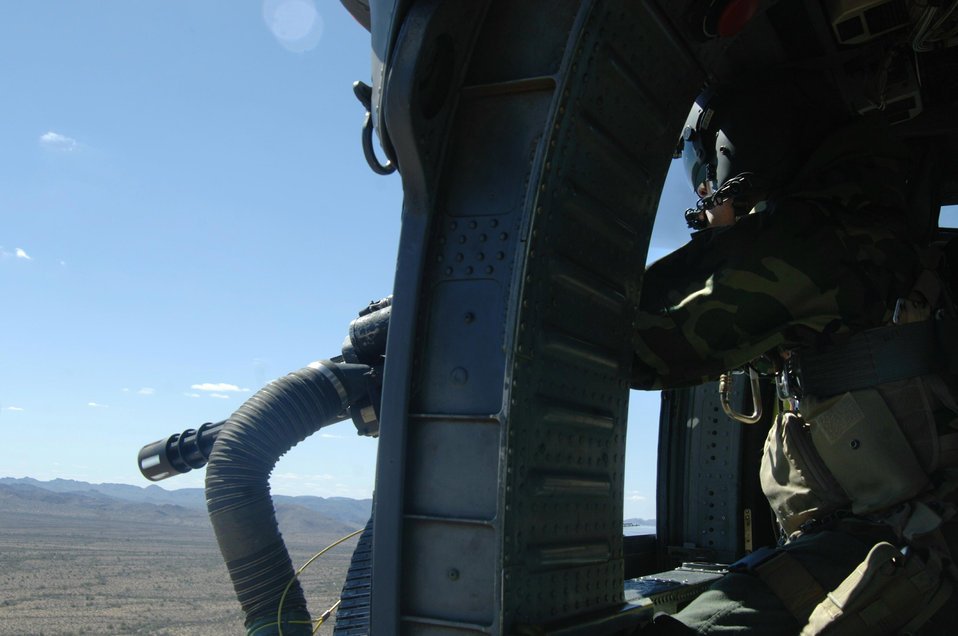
Insertion/extraction training

Staff Sgt Christopher Morford mans the mini gun out the side of a HH-60 Pavehawk helicopter securing the area while another HH-60 simulates rescues, Monday, March 13, 2006, at a local training area. The 55th Rescue Squadron and pararescuemen assigned to the 48th Rescue Squadron were conducting alternate insertion/extraction training near Davis-Monthan Air Force Base, Ariz. Sergeant Morford is an aerial gunner with the 55th Rescue Squadron.